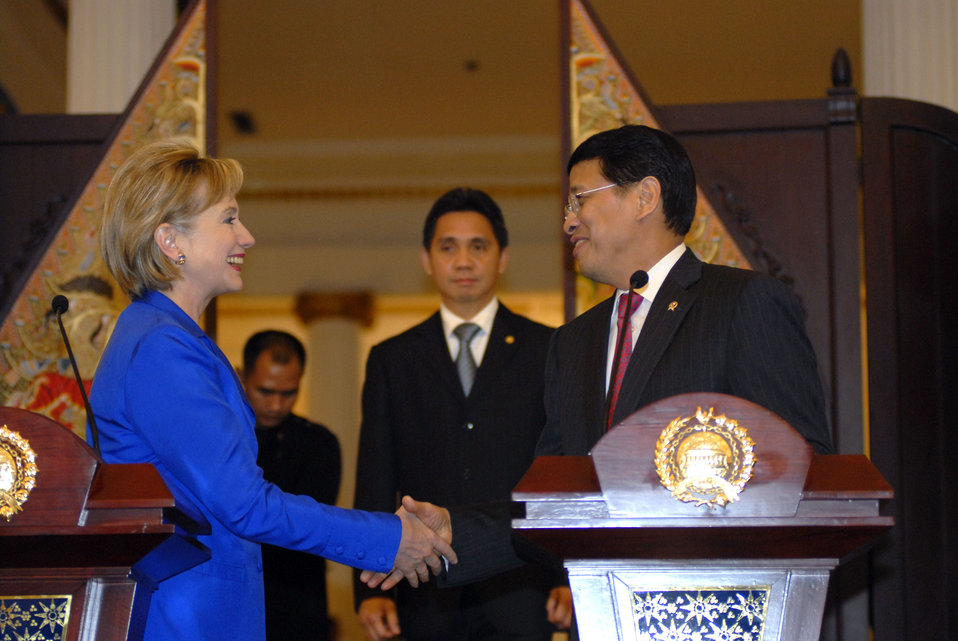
Secretary Clinton With Indonesian Foreign Minister

Secretary Clinton with the Indonesian Foreign Minister, Mr. Hassan Wirajuda, at the Joint Press Conference in Jakarta, Indonesia, Feb. 18, 2009.